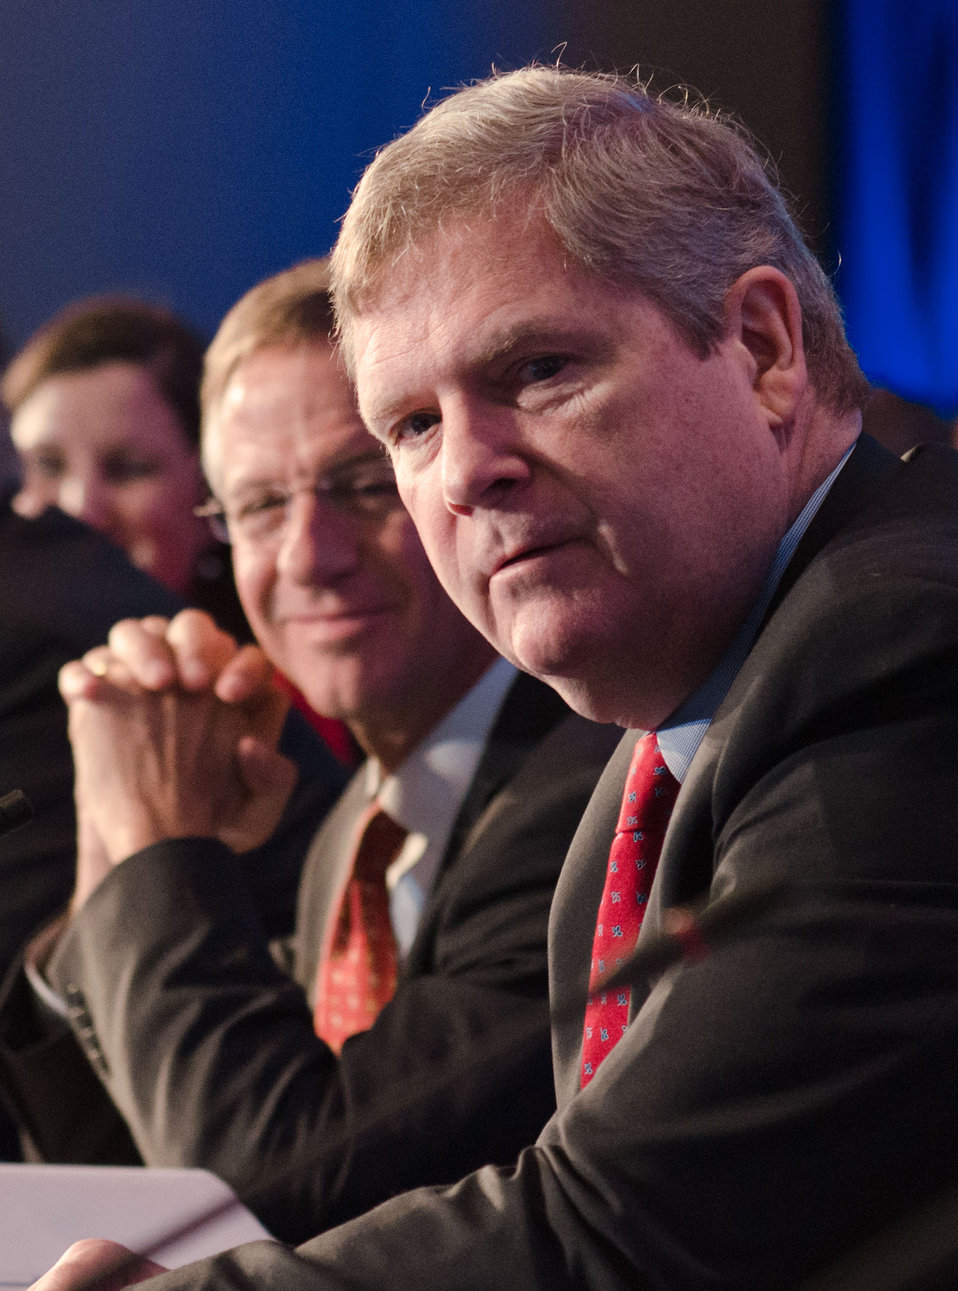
Agriculture Secretary Tom Vilsack was a guest speaker at the National Governer's Association Education, Early Childhood and Workforce Committee meeting in Washington, D.C., on Sunday, February 26, 2012.